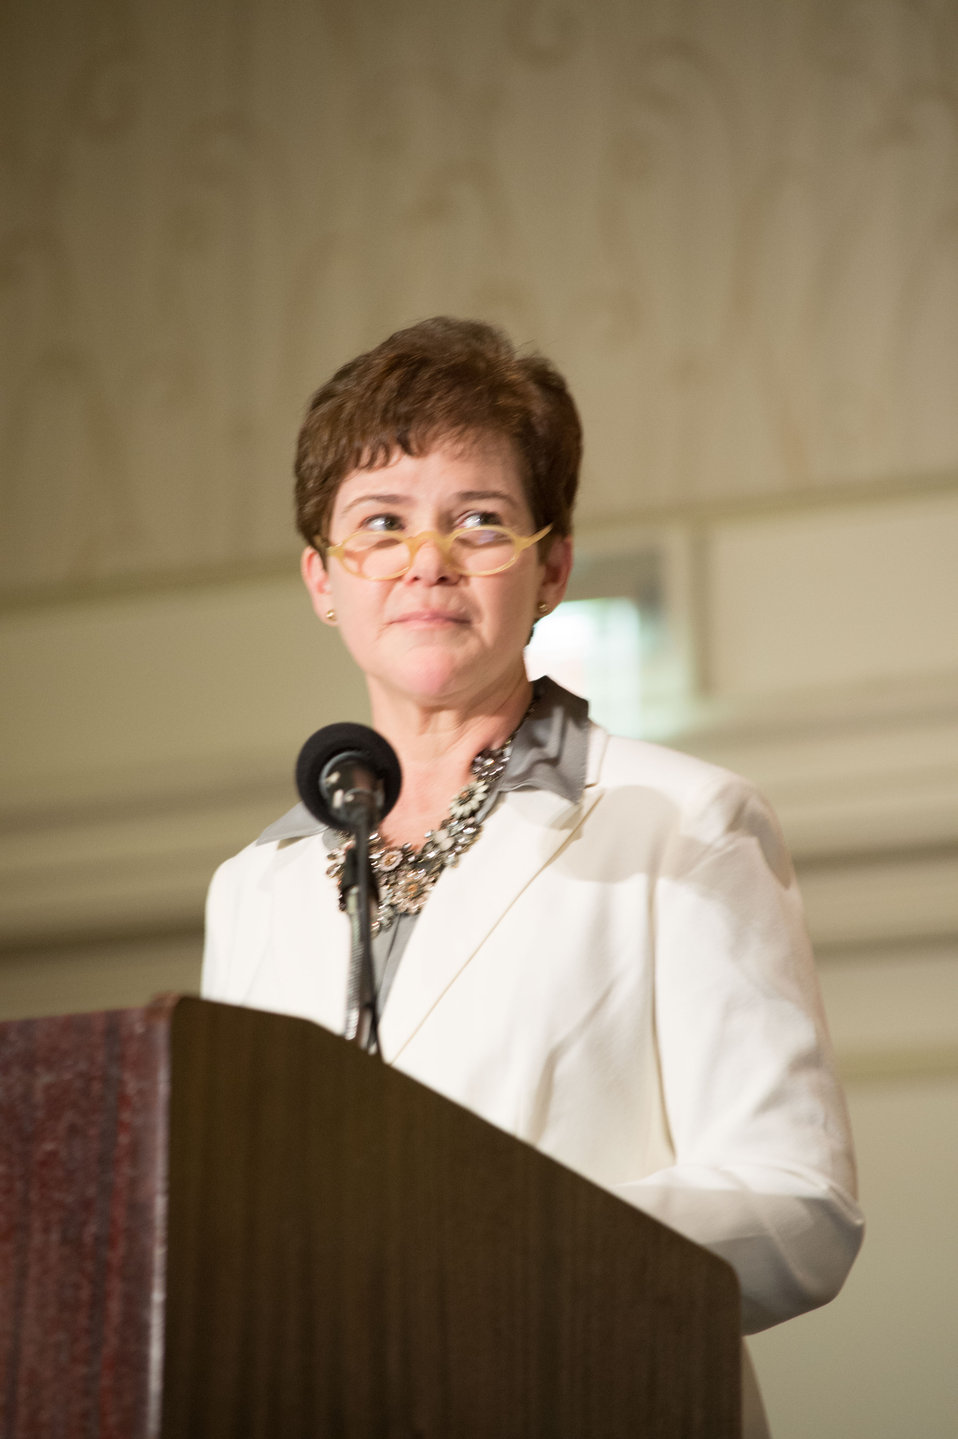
Agriculture Deputy Secretary Krysta Harden makes brief remarks at the opening ceremony of the 2014 Agricultural Outlook Forum in Arlington, VA., on Thursday, Feb. 20, 2014. The U.S. Department of Agriculture's (USDA) annual Agricultural Outlook Forum brings together the agricultural community to discuss policy, trade, science, rural development, and the economic outlook for the coming year. The Forum also focuses on forestry, health and nutrition issues, and the changing dynamics and face of rural America.USDA photo by Bob Nichols.